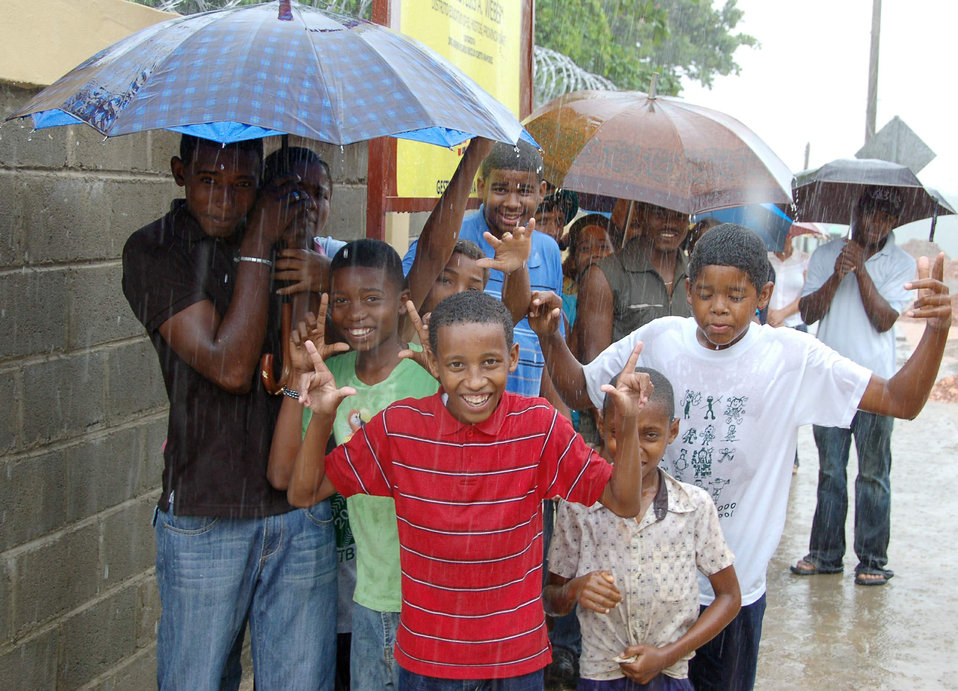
Medics provide care to people in Dominican Republic

Patients brave the rain awaiting medical care at a primary school turned temporary clinic April 22 in Hostos, Dom. Rep., during the medical readiness exercise, Beyond the Horizon 2009 - Caribbean. The medics treated 2,800 patients during the first three days of the U.S. Southern Command sponsored MEDRETE.